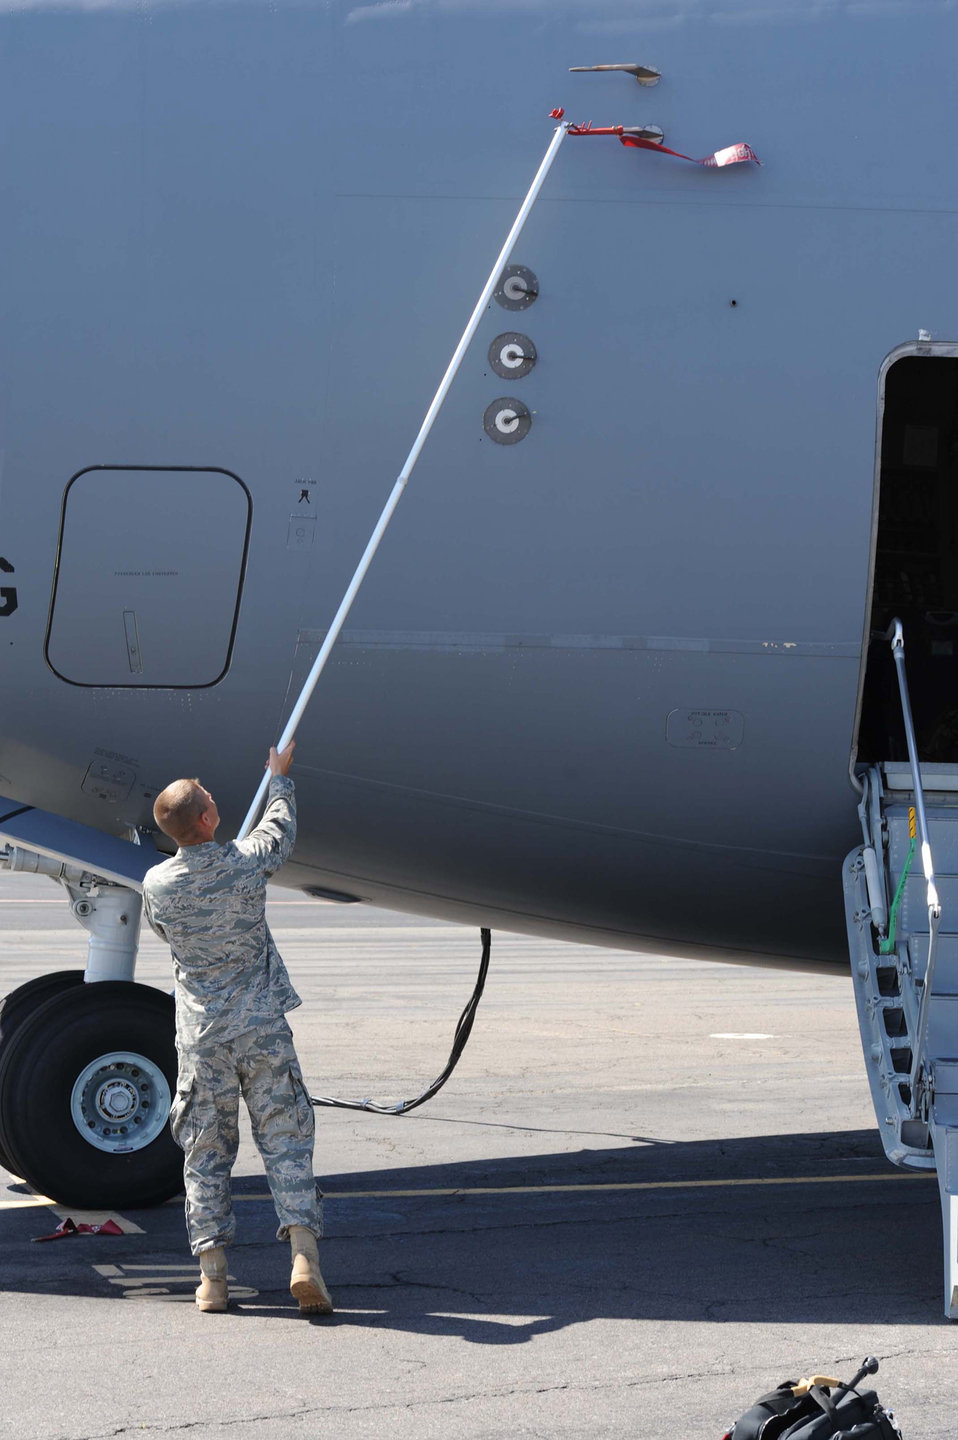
humanitarian mission to Japan

U.S. Air Force Staff Sgt. Eric Jordan, a 15th Aircraft Maintenance Squadron crew chief, removes pitot covers during a pre-flight maintenance inspection on a U.S. Air Force C-17 Globemaster III cargo aircraft at Joint Base Pearl Harbor-Hickam, Hawaii, before departing on a humanitarian mission to Japan on March 12, 2011. The C-17 will be flown to various Air Force bases in Japan during its mission to provide support for Japan relief efforts in the wake of tsunami and earthquake damage there.